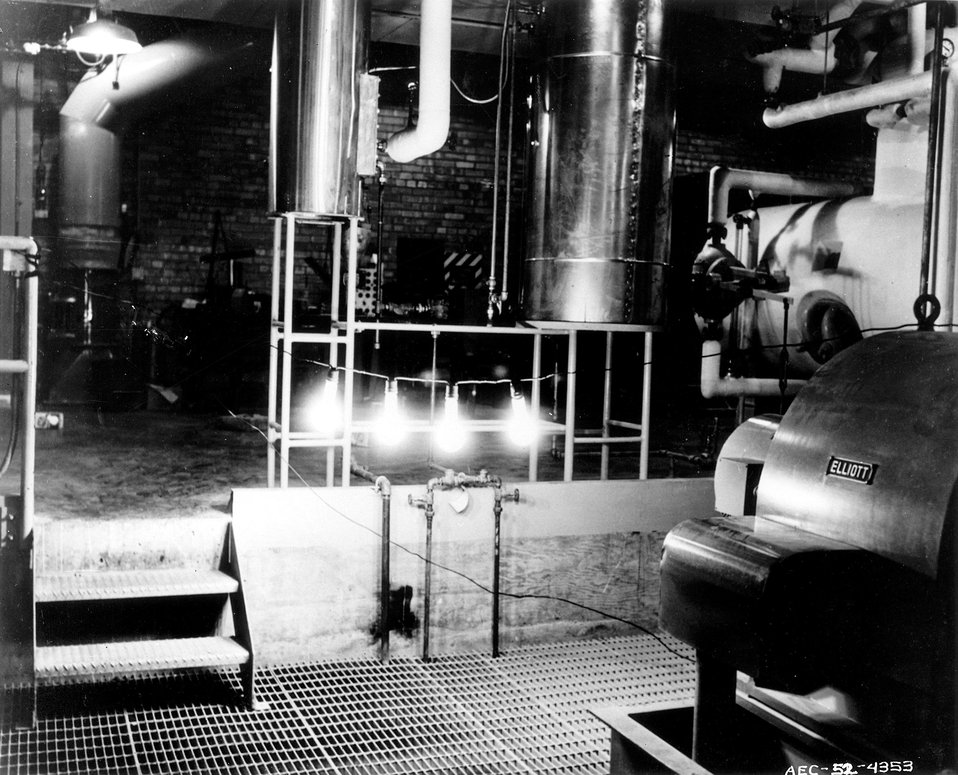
The electric light bulbs in this photo show the first known use of electric power from atomic energy. Circa 1952.